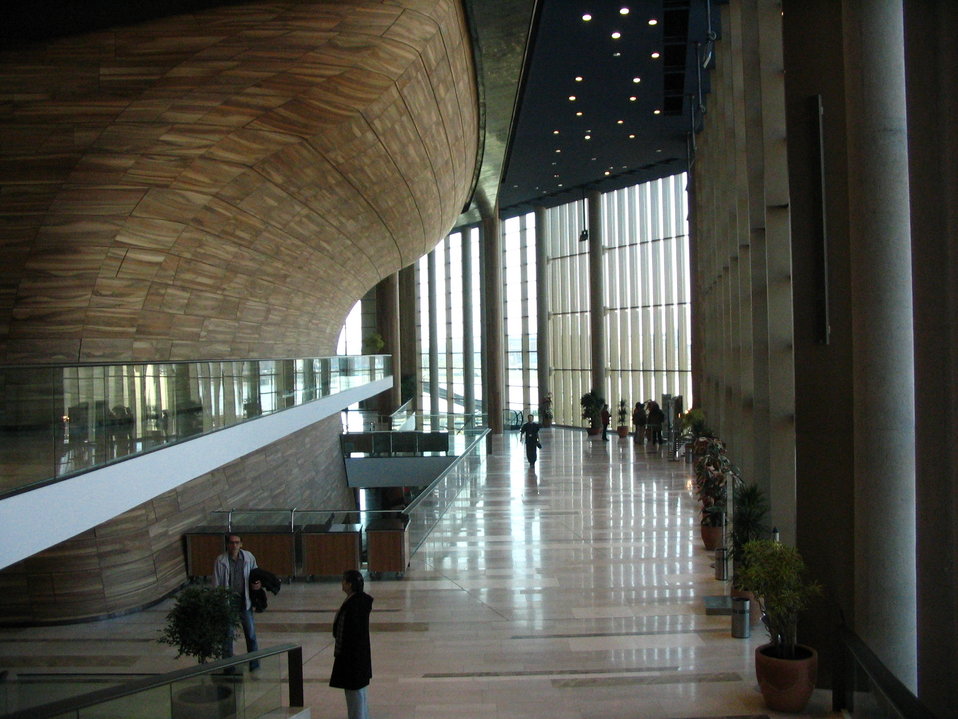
Palace of Arts Own pic from 2005.